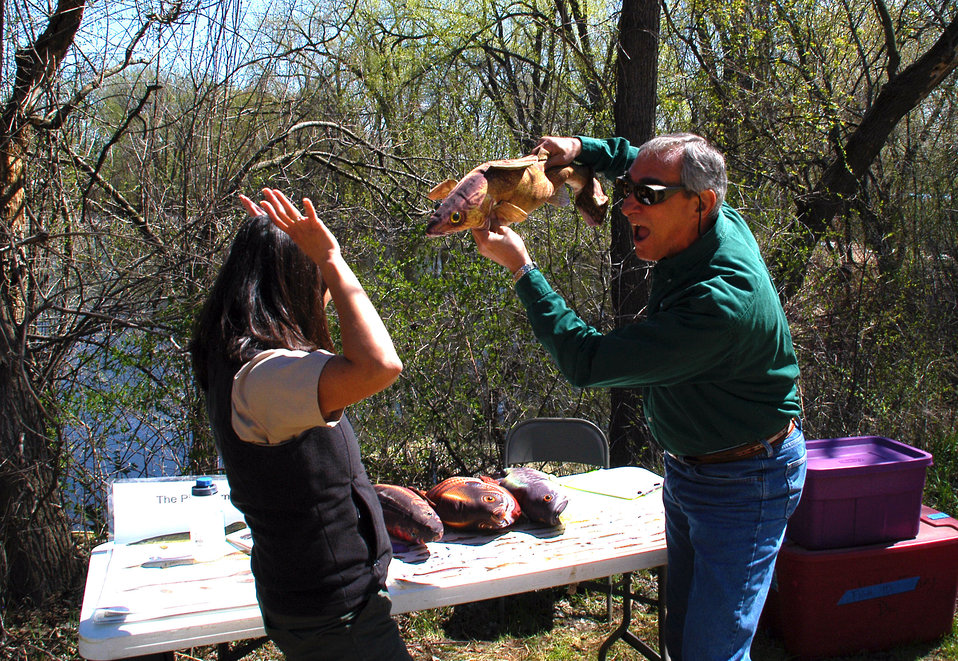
Regional Director Tom Melius jokes with MN DNR's Krista Jensen

U.S. Fish and Wildlife Service Regional Director Tom Melius jokes around with the MN DNR's Krista Jensen at the Fish I.d. Station.